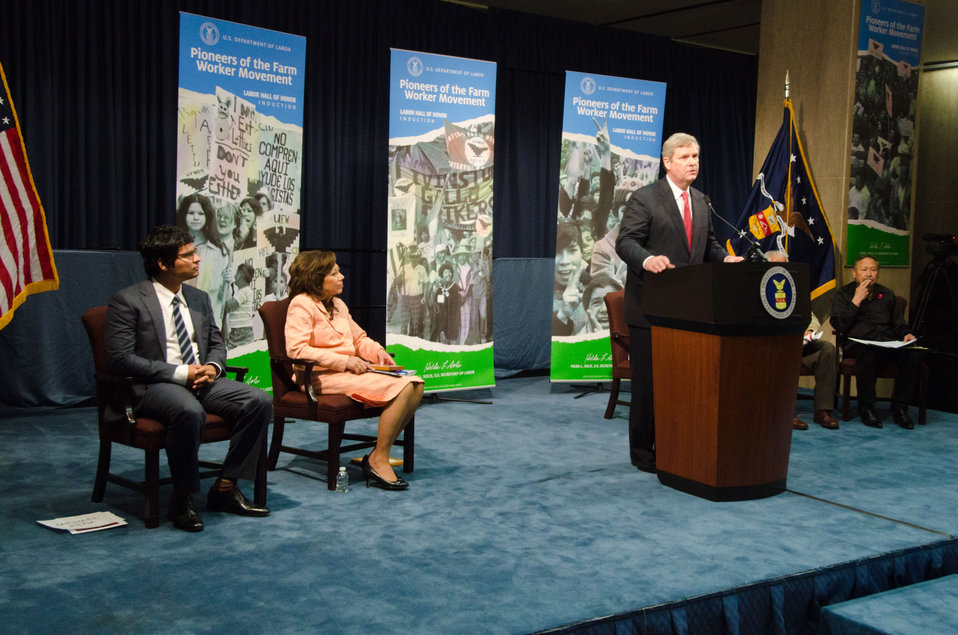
From left: Michael Pena, actor, Labor Secretary Hilda Solis, Agriculture Secretary Tom Vilsack and Arturo Rodriguez, President, United Farm Workers of America during the dedication of the Cesar E. Chavez Memorial Auditorium at the United States Department of Labor in Washington, D.C., Monday, March 26, 2012. Secretary Vilsack spoke of the hard work and sacrifices farm laborers have made for American agriculture.